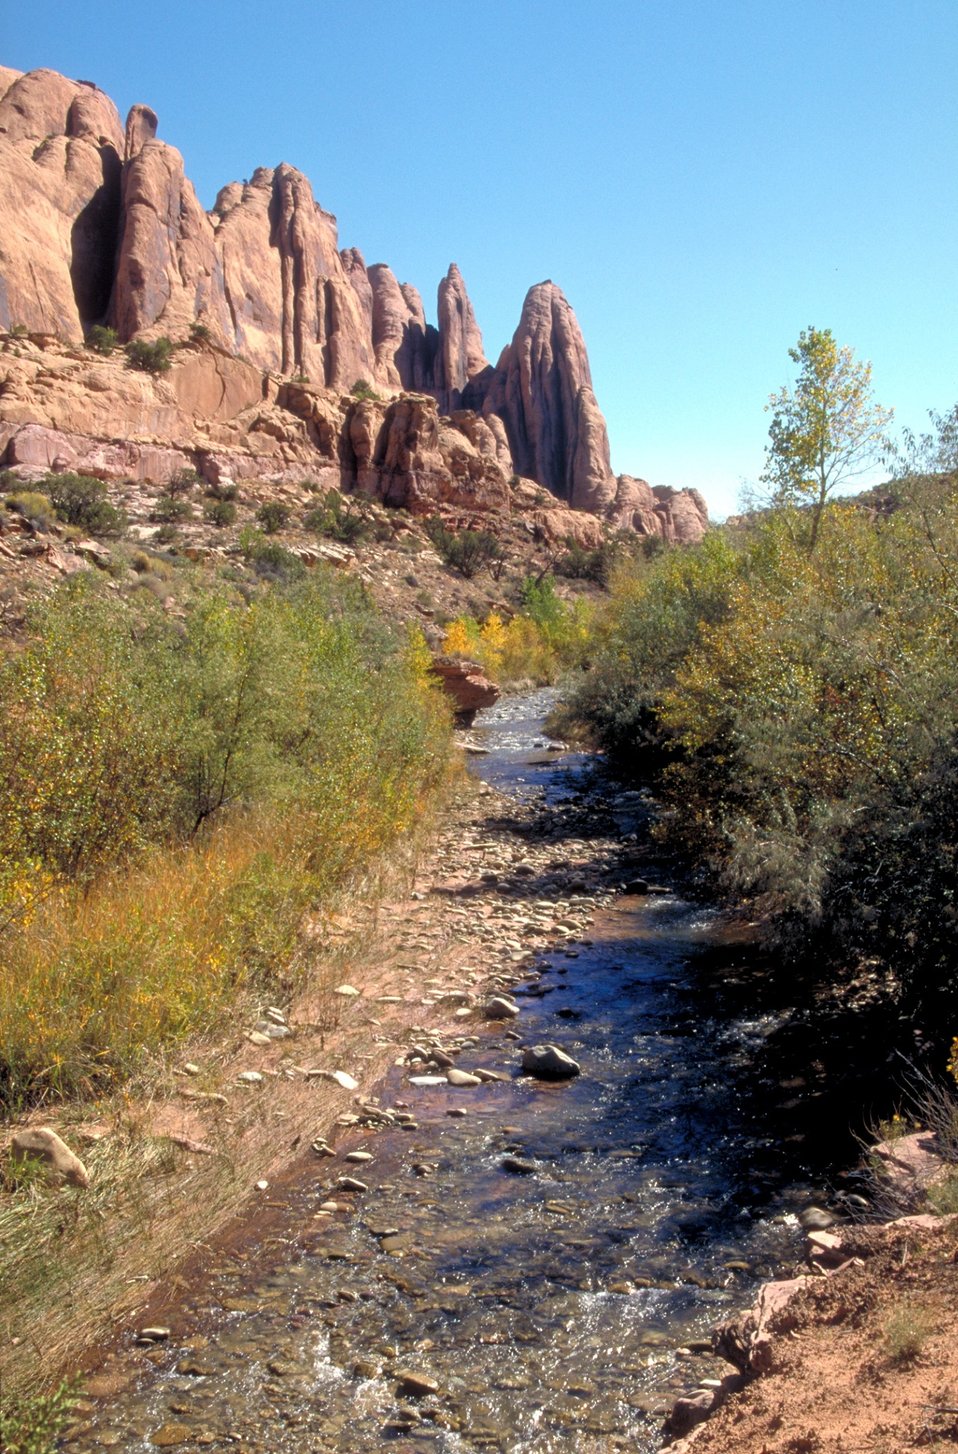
South fork of Mill Creek near Moab, Utah.